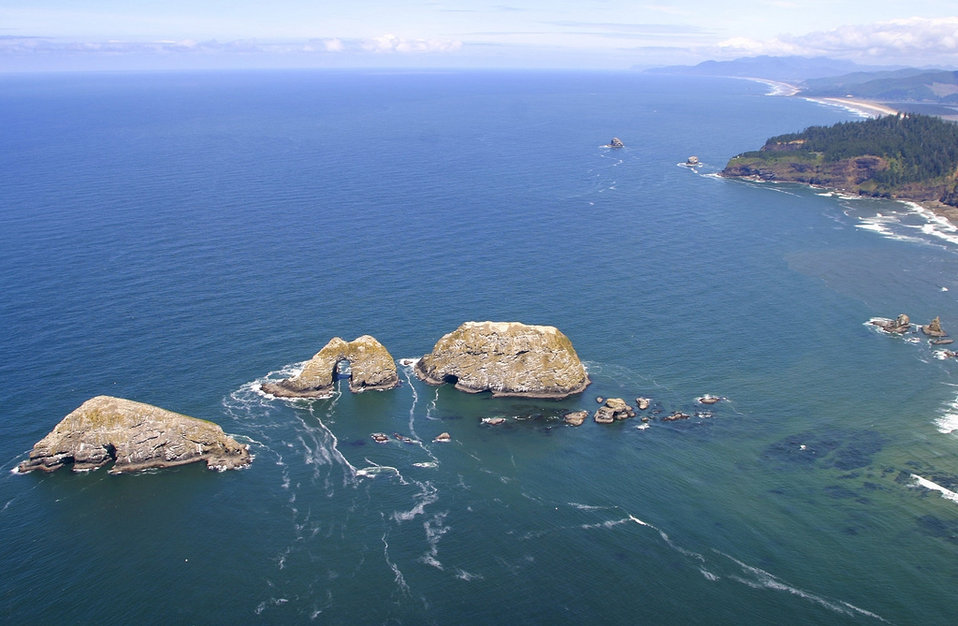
Three Arch Rocks

Cape Meares National Wildlife Refuge, OR
Photo: Roy W. Lowe, USFWS
Set aside as for nesting seabirds by Pres. Teddy Roosevelt in 1907, OR's Three Arch Rocks is now part of Cape Meares National Wildlife Refuge. Thousands of rocks, islands and headlands are now protected in the Oregon Coast National Wildlife Refuge Complex.

Aerial view of Three Arch Rocks National Wildlife Refuge (www.fws.gov/oregoncoast/3archrocks/index.htm) .with Cape Meares National Wildlife Refuge (www.fws.gov/oregoncoast/capemeares/index.htm) and Oregon Islands National Wildlife Refuge (www.fws.gov/oregoncoast/oregonislands/index.htm) in the background.